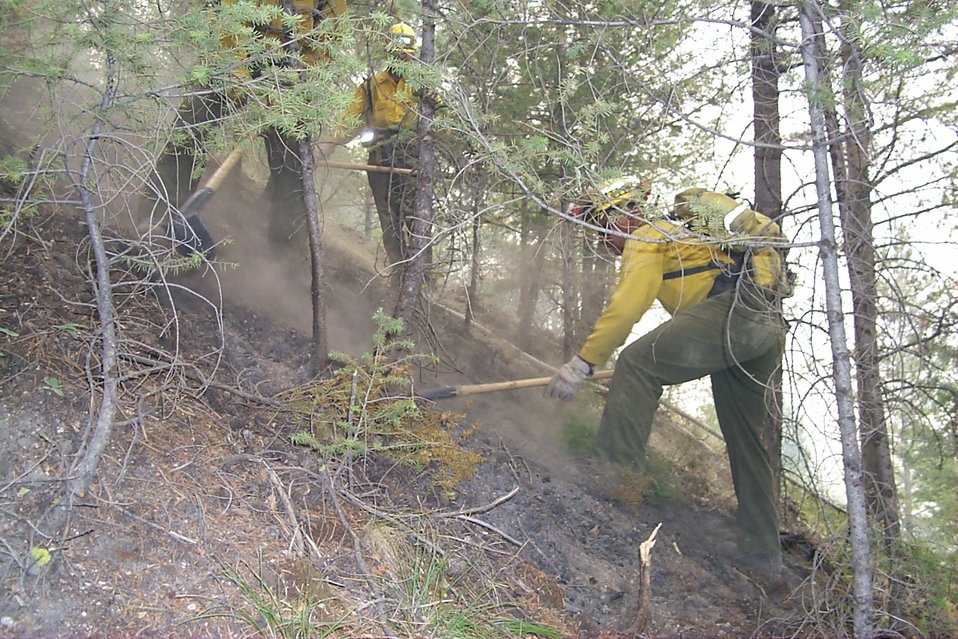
Line crew Fire Clearwater Fire Salmon Field Office USRD Upper Snake River District